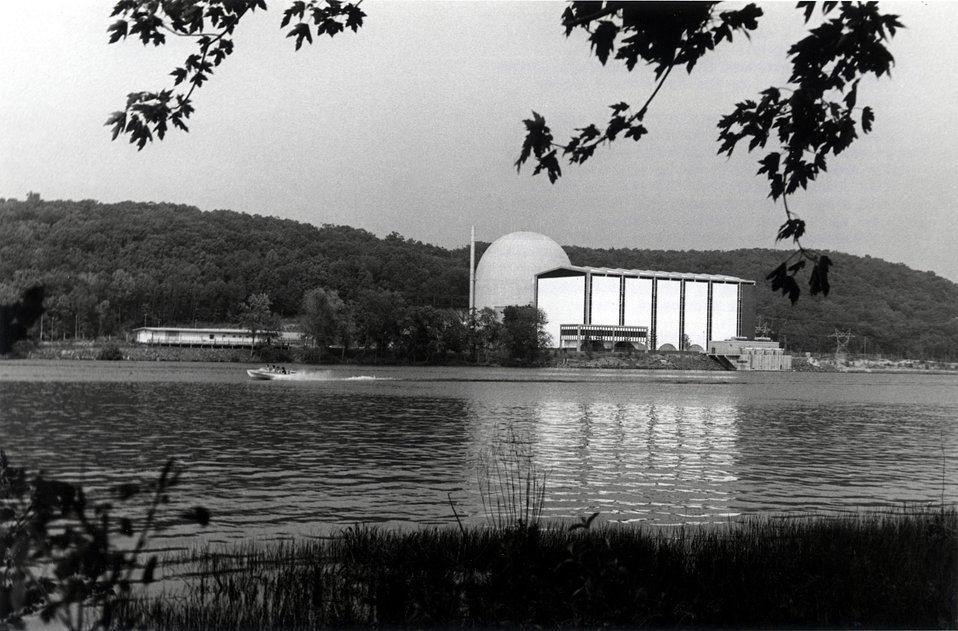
The Haddam Neck Nuclear Plant.